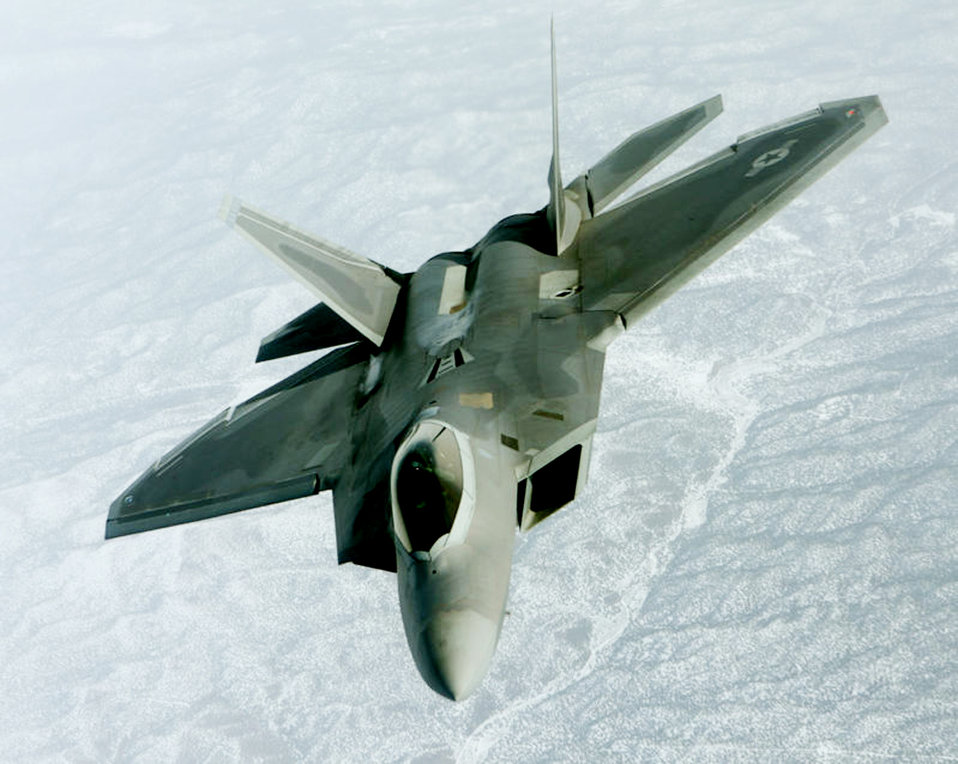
Raptors reign at Red Flag

An F-22 Raptor from Elmendorf Air Force Base, Alaska, prepares to regroup after being refueled Feb. 2, 2010, during Red Flag over the Nevada Test and Training Range. Red Flag is a realistic combat training exercise involving the air forces of the United States and its allies.